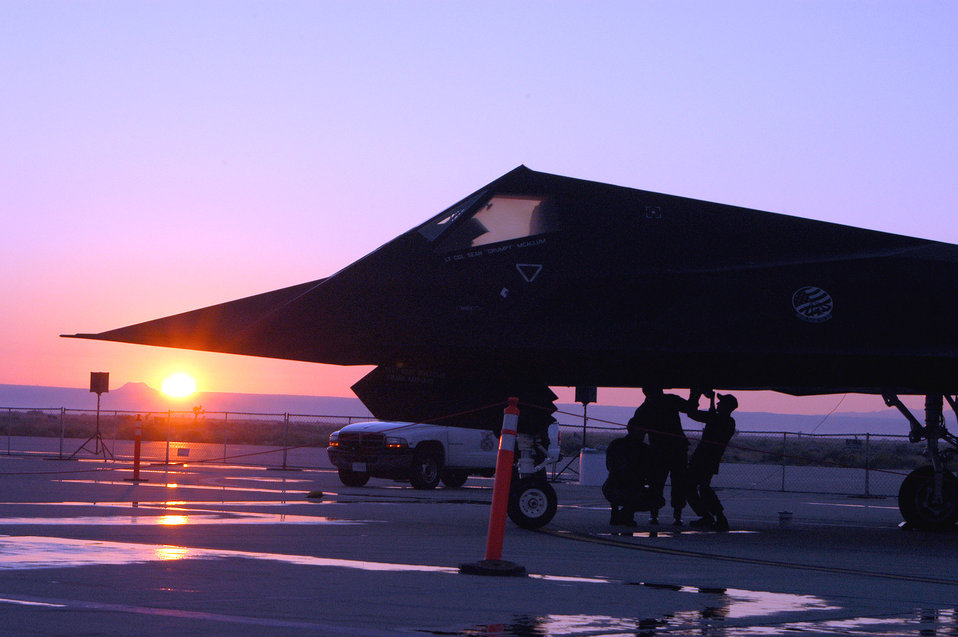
Edwards air show

EDWARDS AIR FORCE BASE, Calif. -- Maintainers do an early morning check on an F-117 Nighthawk here. The Airmen, from the 410th Flight Test Squadron at Plant 42 in Palmdale, Calif., did their work Oct. 23. The stealth fighter was on static display Oct. 22 and 23 at the 2005 Edwards Open House and Air Show. About 120,000 people attended the event.